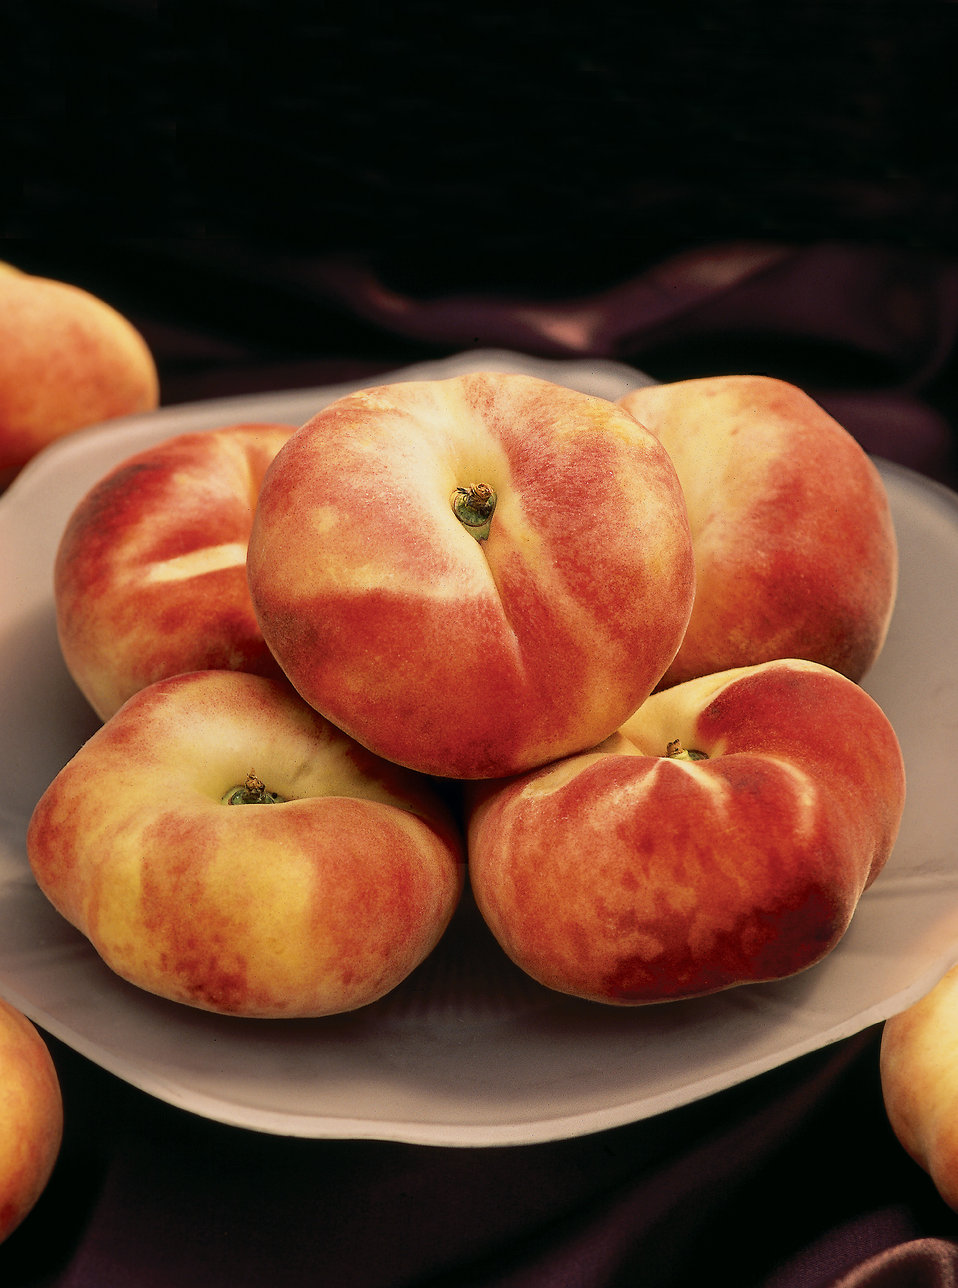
Galaxy peach, a new peento peach by the U.S. Department of Agriculture (USDA) Agricultural Research Service (ARS), sits on plate on Aug. 28, 2007. Peento peaches are flattened rather than perfectly round.